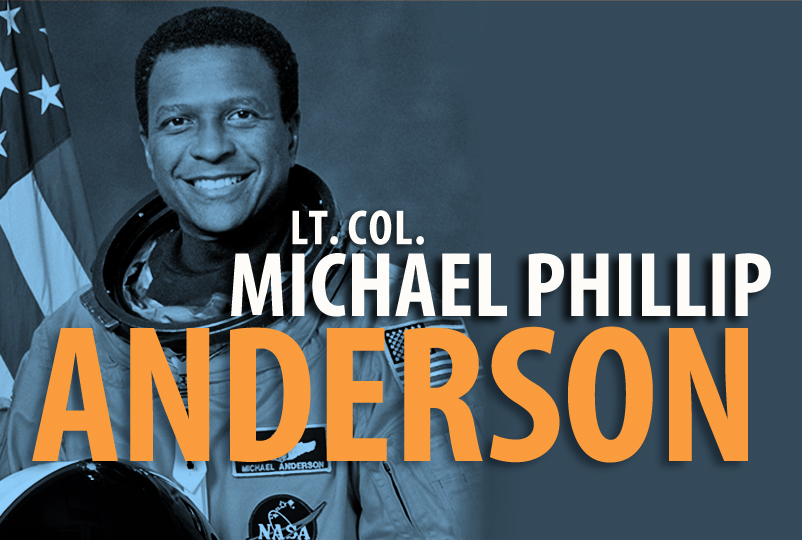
Lt. Col. Michael Phillip Anderson